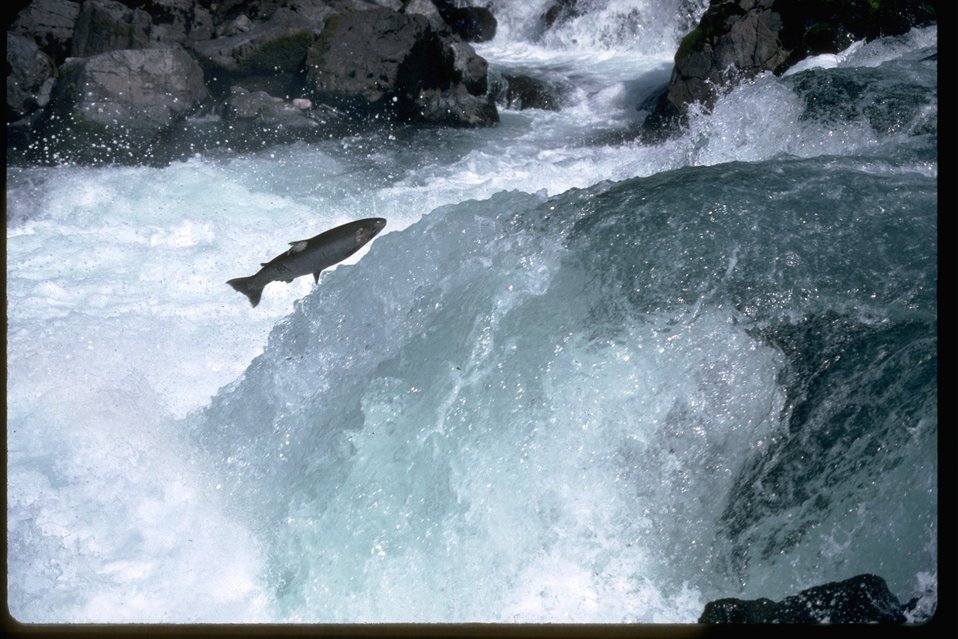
Salmon or Steelhead jumping up falls.